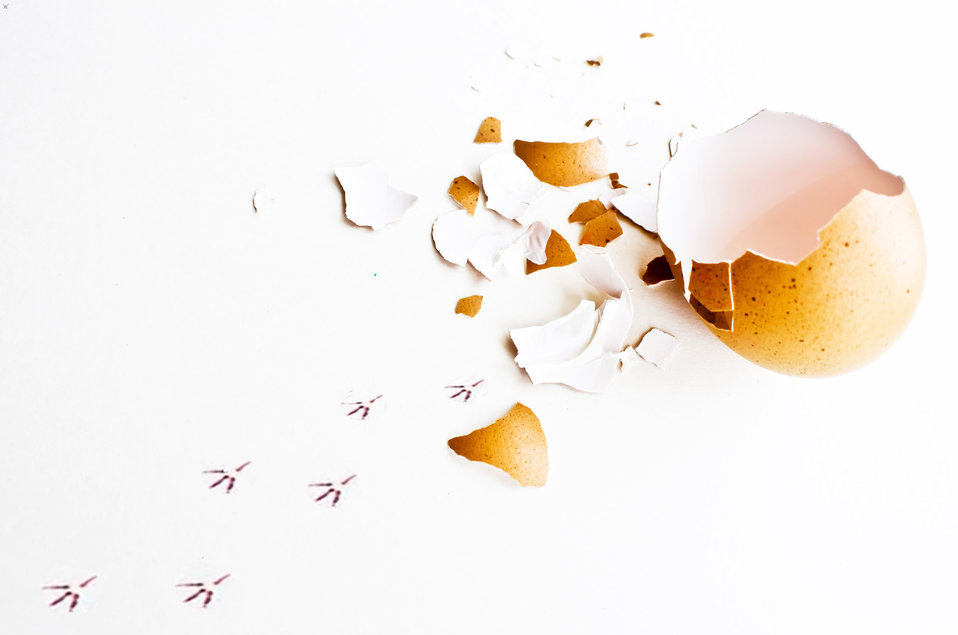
First trip - background.